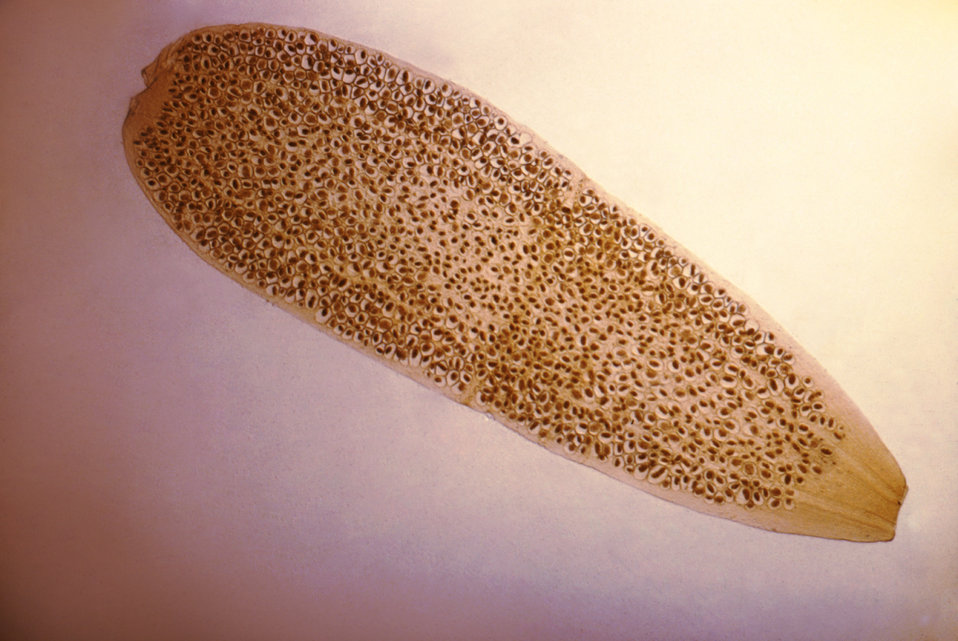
This micrograph depicts a proglottid, i.e., a tapeworm segment, from the cestode Dipylidium caninum.